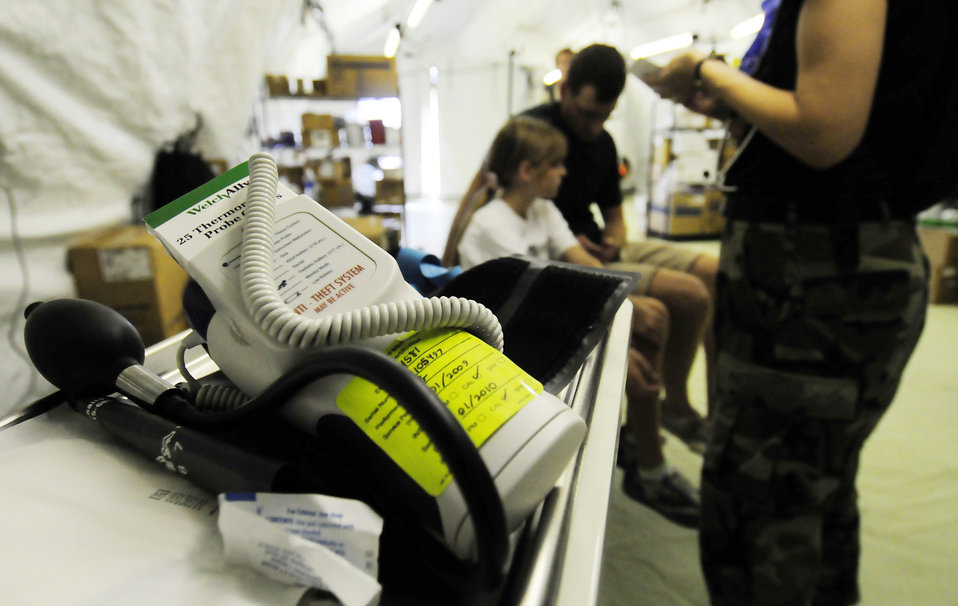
Humanitarian assistance team completes evaluation at Andersen

Members from the 36th Medical Group and the 36th Contingency Response Group work together to achieve a rapidly deployable and self-sustaining medical capability during a simulated mass casualty exercise for the Humanitarian Assistance Rapid Response Team July 15 at Andersen Air Force Base, Guam.